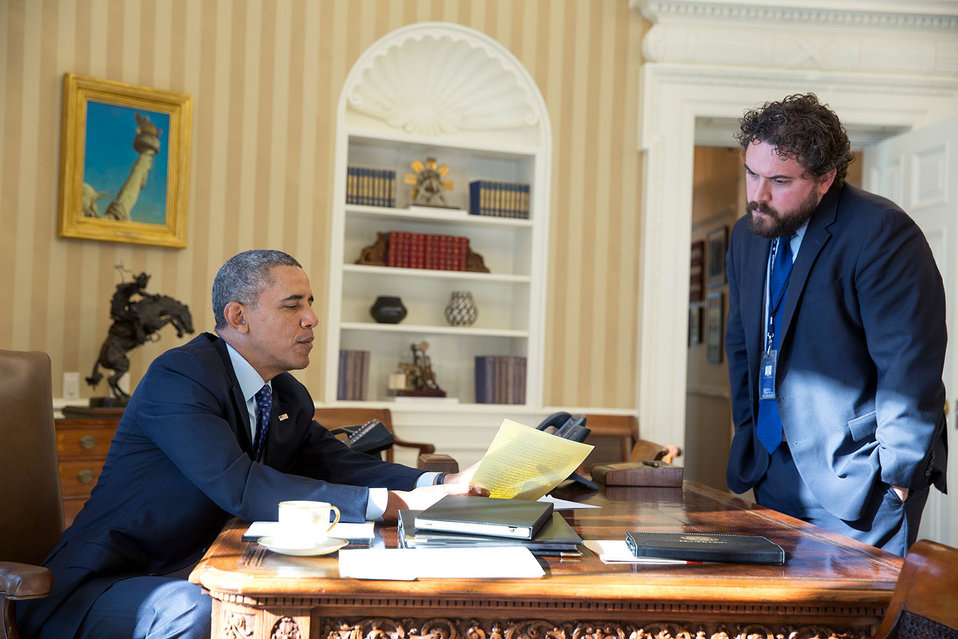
President Barack Obama works on his State of the Union address with Director of Speechwriting Cody Keenan in the Oval Office, Jan. 22, 2014.